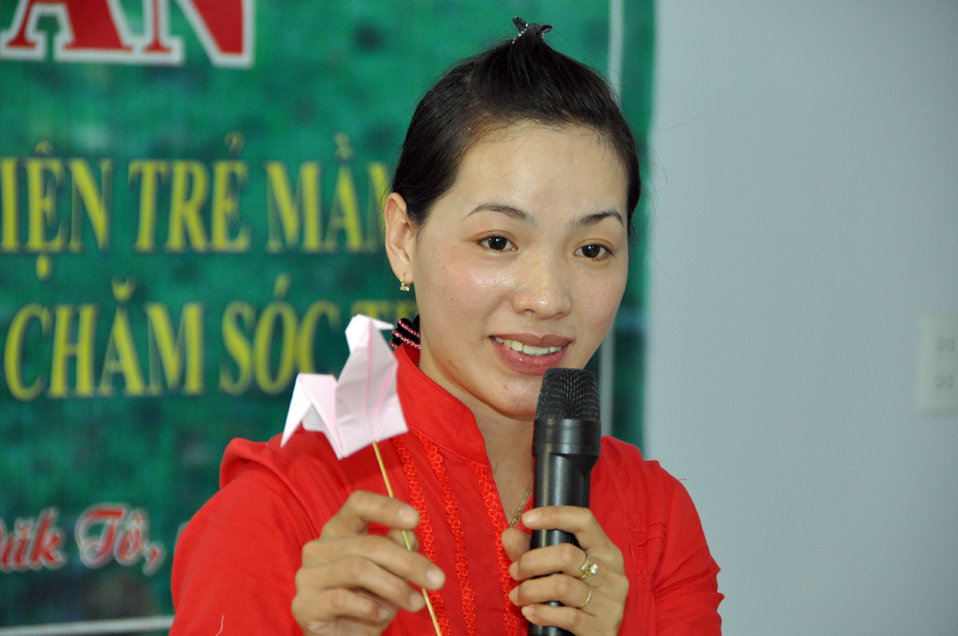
USAID contributes to refurbished pre-schools and teacher training in Vietnam